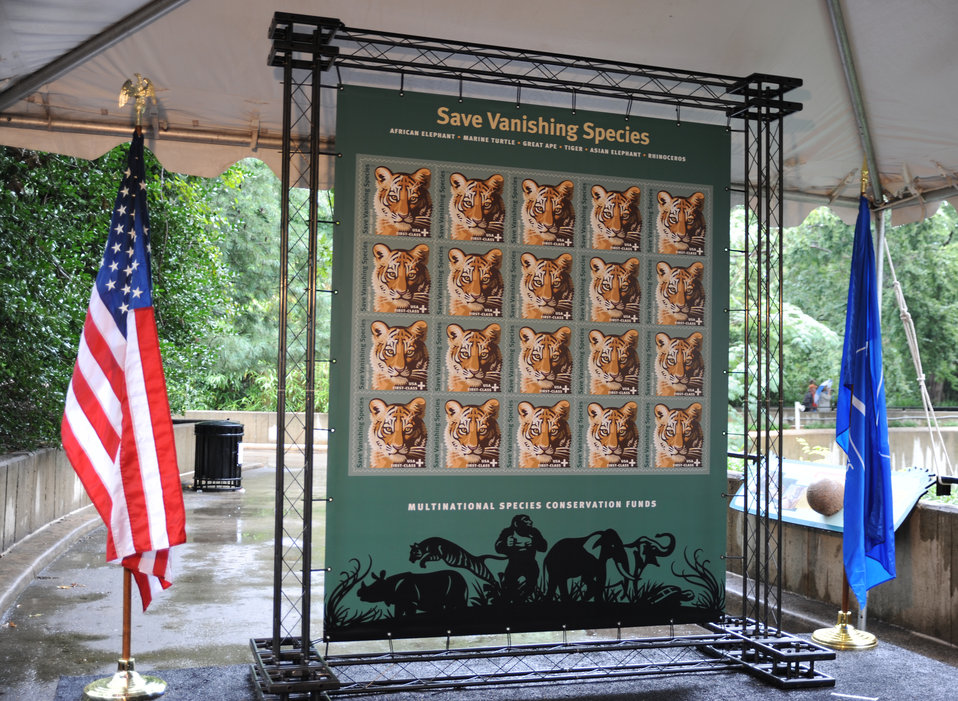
Stamp Display FWS Lavonda Walton FWS